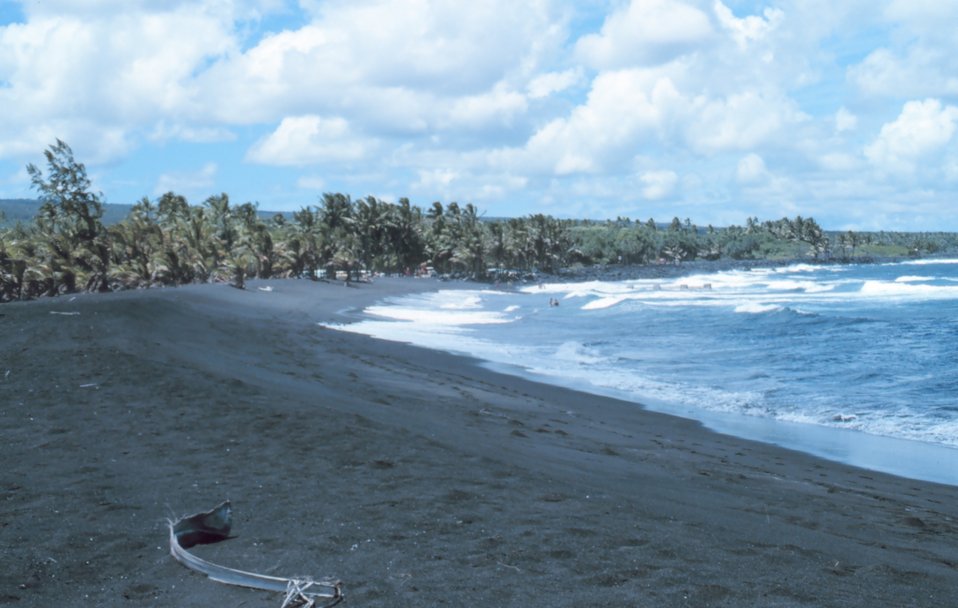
Black lava sand beach known locally as the 'Drainpipe' - now destroyed by lava flow.